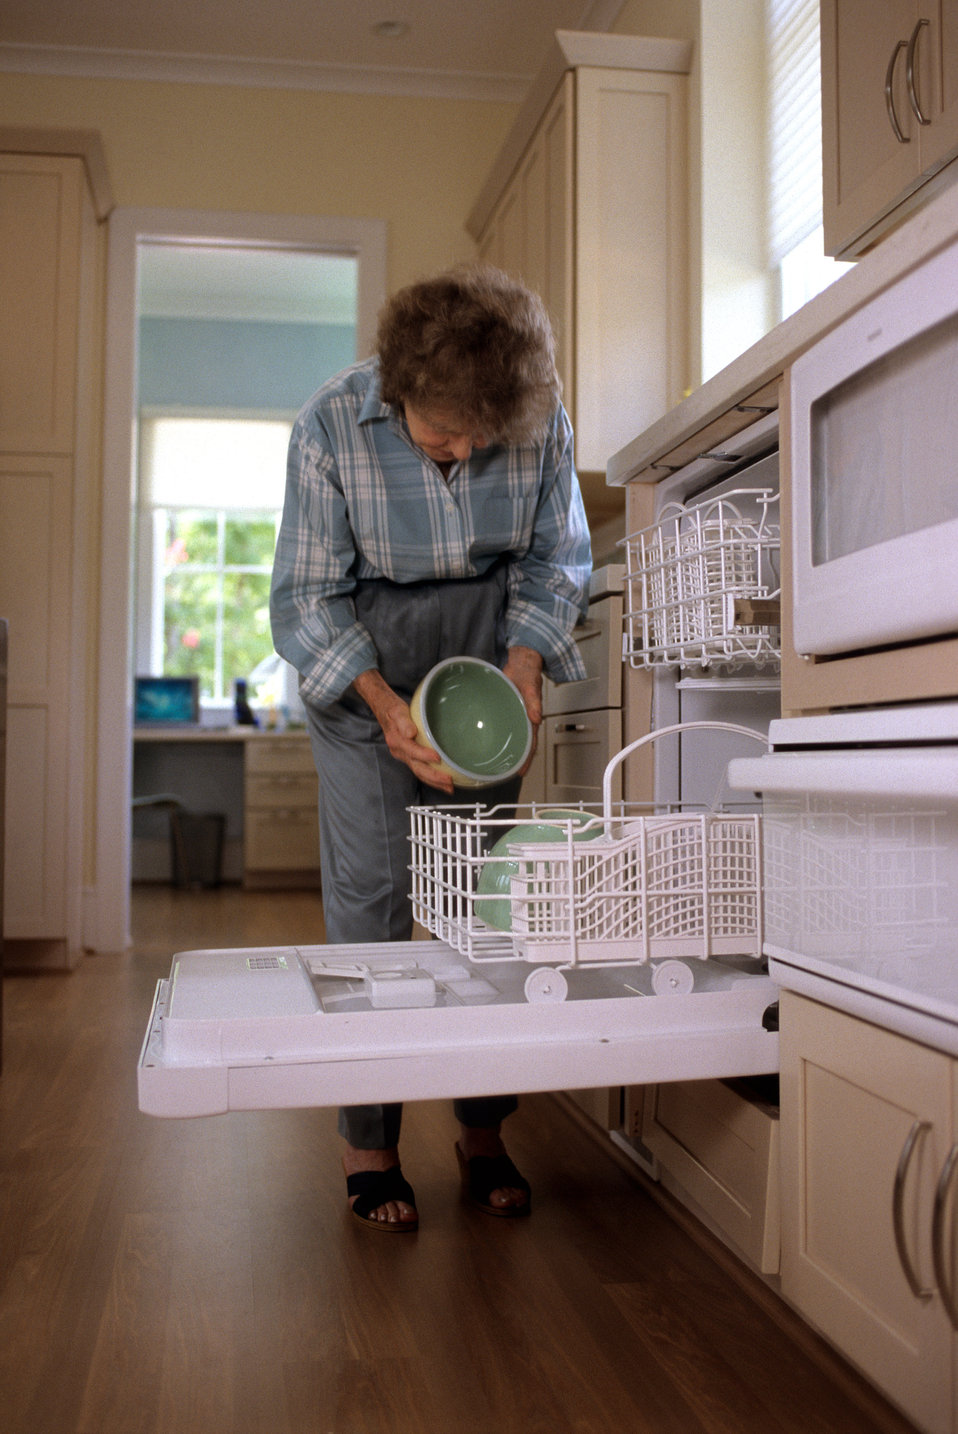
This 2000 image depicted a universally-designed, raised dishwasher that was being loaded by an elderly woman, and though she was bent over, seemed to be filling the appliance in an effortless manner. Dishwashers installed this way raise the storage area up within reach of people who use wheelchairs, as well as those such as this woman, who might have difficulty in bending down to the level of conventionally installed appliances.